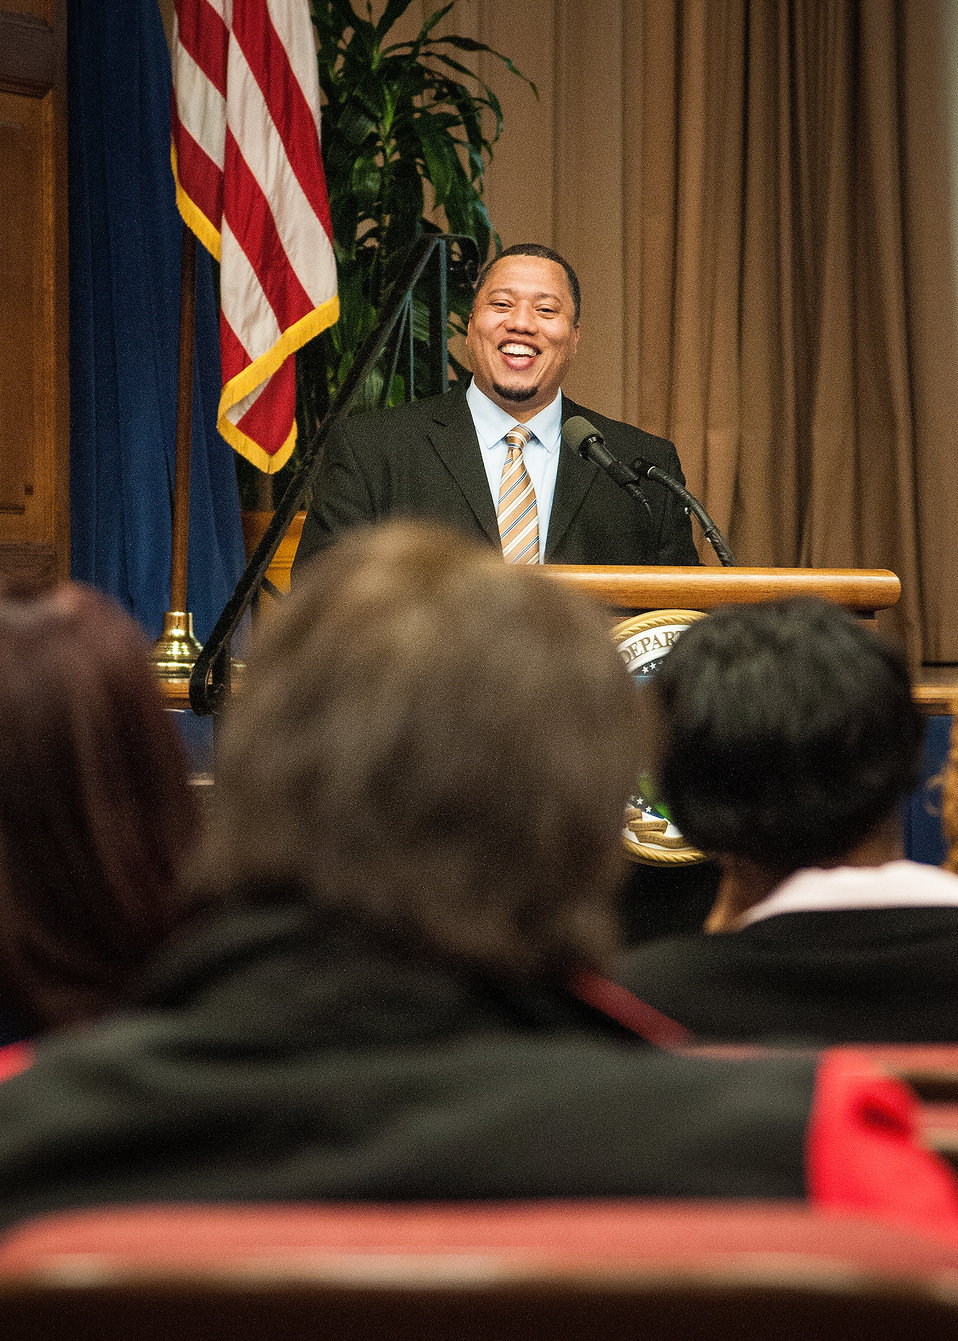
U.S. Equal Employment Opportunity Commission (EEOC) Office of Federal Operations Federal Sector Programs Directo Dexter Brooks speaks EEOC Government Wide Initiatives at the First Annual All Hands Special Emphasis Program Managers (SEPM) Meeting at the U.S. Department of Agriculture Jefferson Auditorium in Washington, D.C. on Wednesday, Mar. 13, 2013.